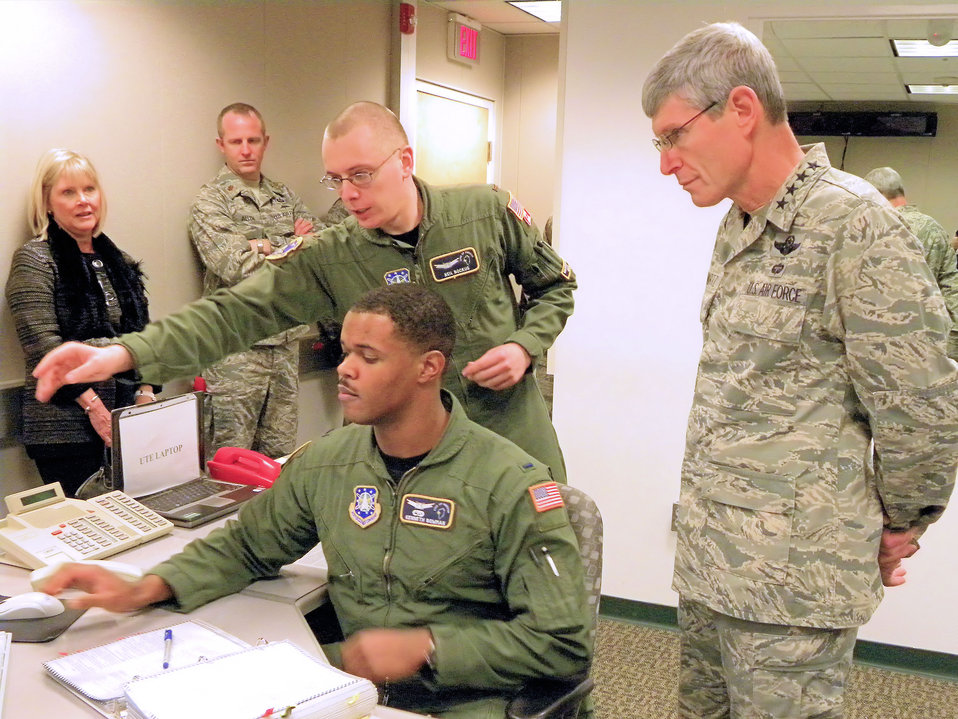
CSAF visit to Thule AB

Air Force Chief of Staff Gen. Norton Schwartz receives an orientation from 1st Lt. Kenneth Bowman (seated) and 2nd Lt. Neil Bockus of the 12th Space Warning Squadron at Thule Air Base, Greenland, Nov. 25, 2010, during a Thanksgiving visit. The 12th SWS is charged with operating, maintaining and securing the Ballistic Missile Early Warning System, which provides for missile warning and space surveillance.